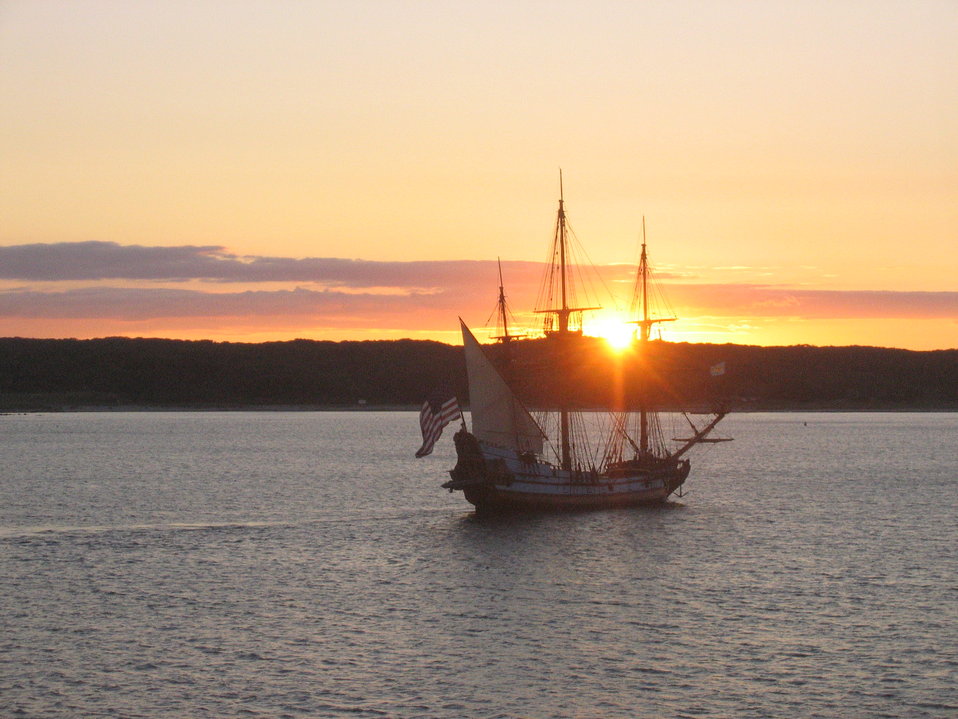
Delaware's tall ship, the KALMAR NYCKEL, sailing into the sunset. This ship is homeported in Wilmington, Delaware.